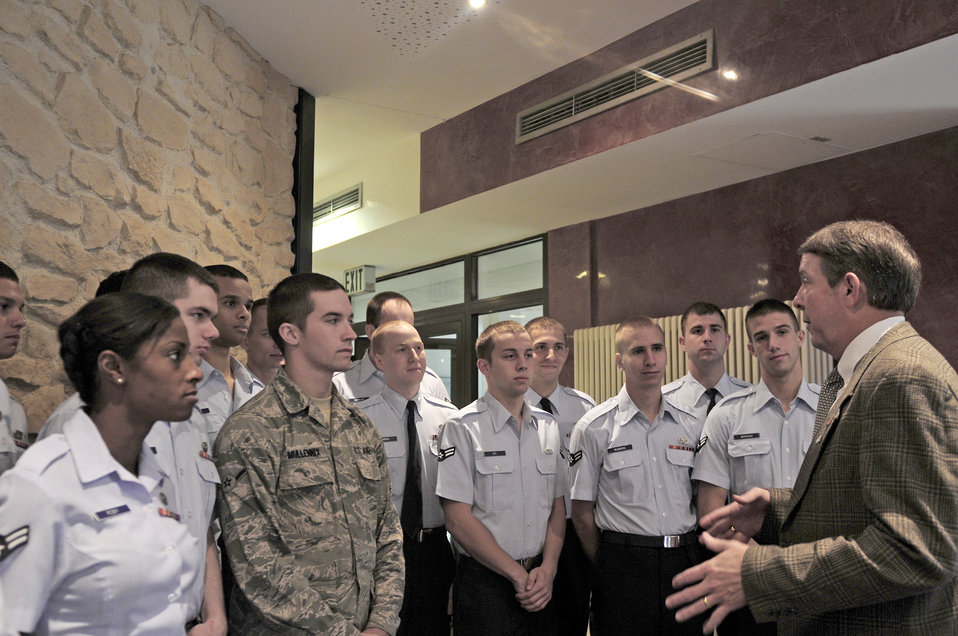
Chief McKinley visits Ramstein Airmen

Fifteenth Chief Master Sgt. of the Air Force Rodney McKinley talks to Airmen July 26, 2010, at Ramstein Air Base, Germany. Chief McKinley visited to meet Airmen in Germany.